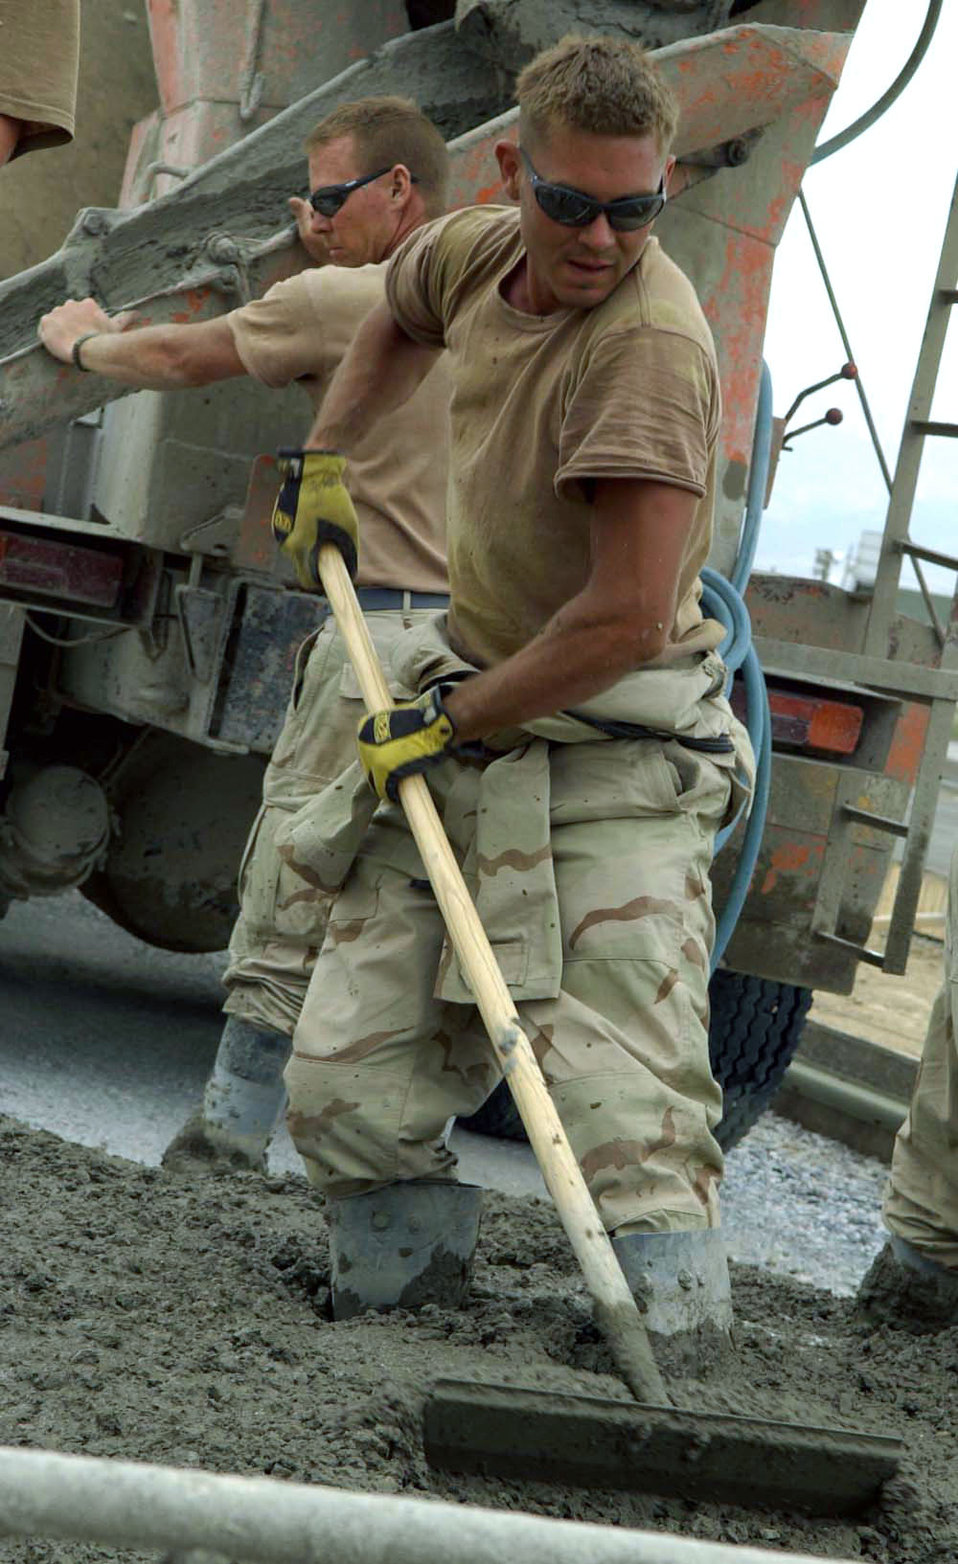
Cultivating a concrete garden

BAGRAM AIR BASE, Afghanistan -- Staff Sgt. Brady Dryden levels concrete on the flightline here. Airmen have laid more than 135,000 square feet of concrete since February. Sergeant Dryden is a civil engineer with the 455th Expeditionary Operations Group and is deployed from Cannon Air Force Base, N.M.